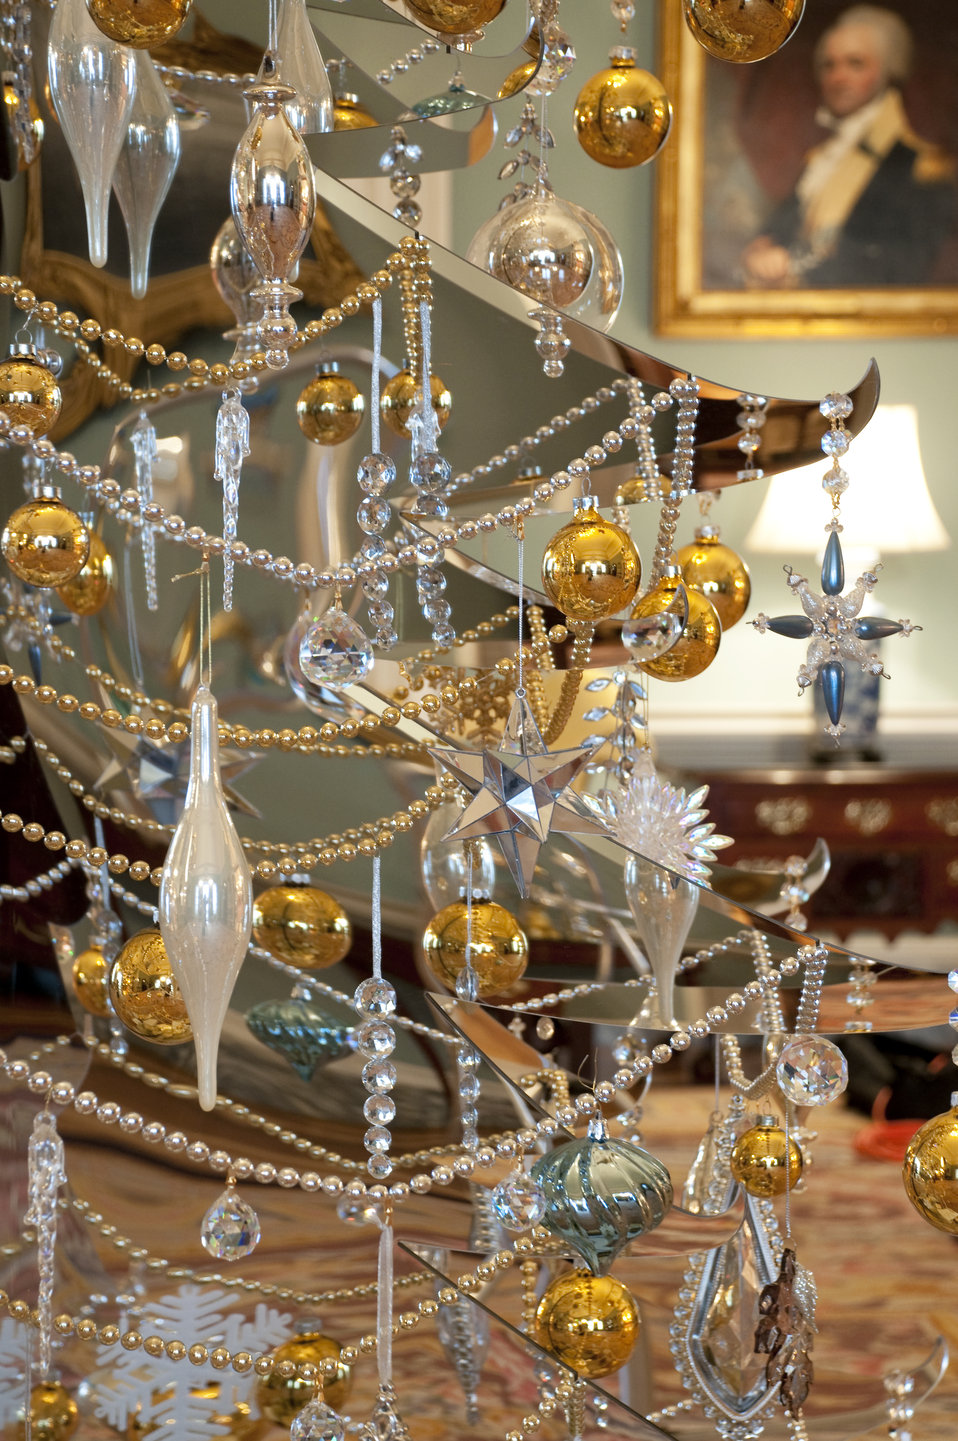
The U.S. Department of State Partners With Time Inc. and InStyle To Decorate the Thomas Jefferson State Reception Room

The U.S. Department of State partners with Time Inc. and InStyle to decorate the Diplomatic Reception Rooms for the Holidays in December 2010. Pictured in this photo is the Thomas Jefferson State Reception Room.